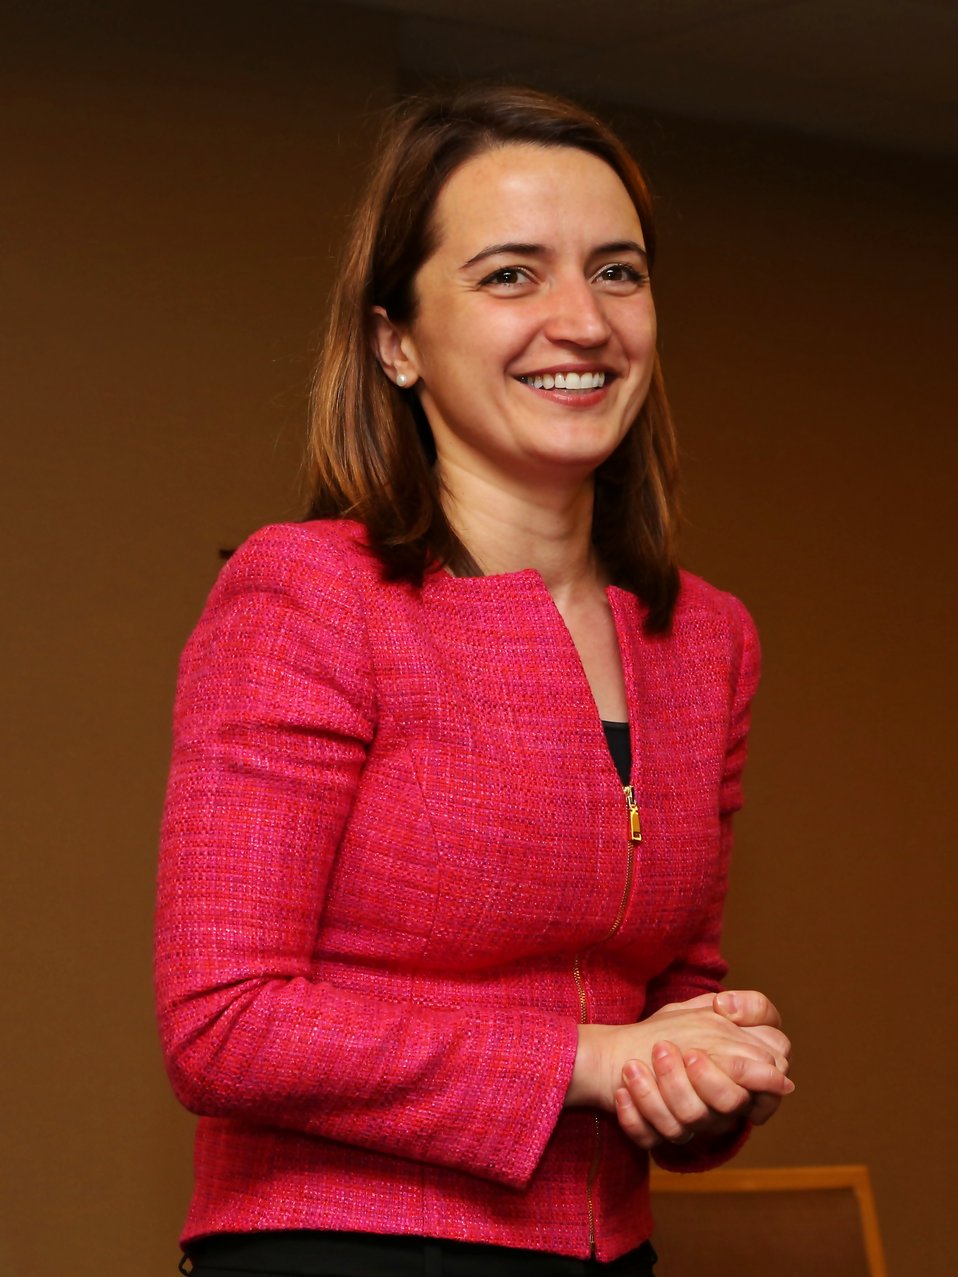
Day 2 Subprogram Overviews 7

A candid moment with Dr. Lidja Sekaric, Technology To Market Program Manager.